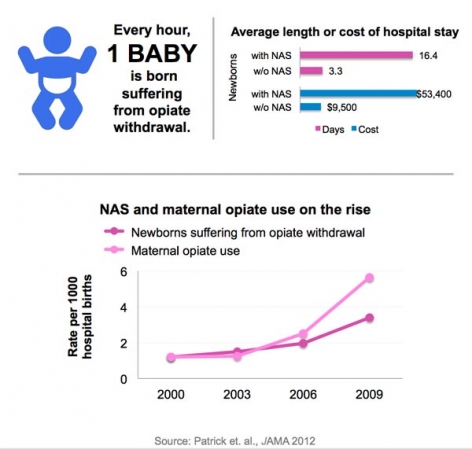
Maternal opiate use and newborns suffering from opiate withdrawal are on the rise in the U.S.

Text Description of Infographic

Use of opiates during pregnancy can result in a drug withdrawal syndrome in newborns called neonatal abstinence syndrome (NAS). A new study to determine the extent, context, and costs of NAS found that incidence of NAS is rising in the United States. The proportion of babies born with NAS tripled from 2000 to 2009, when an estimated 13,539 infants were born with NAS —equivalent to one baby suffering from opiate withdrawal born every hour. Newborns with NAS were more likely than other babies to also have low birthweight and respiratory complications. The number of delivering mothers using or dependent on opiates rose even more—nearly five-fold—from 2000 to 2009, to an estimated 23,009. In 2009, newborns with NAS stayed in the hospital an average of 16.4 days (compared to 3.3. days for other newborns), costing hospitals an estimated $720 million; the majority of these charges (77.6%) were paid by state Medicaid programs, reflecting the greater tendency of opiate-abusing mothers to be from lower-income communities. The rising frequency (and costs) of drug withdrawal in newborns points to the need for measures to reduce antenatal exposure to opiates.

Top Left Graph: Every hour, 1 baby is born suffering from opiate withdrawal.

Top Right Graph: Average length or cost of hospital stay graph. Newborns with NAS stayed in the hospital for an average of 16.4 days compared to 3.3 days for those without NAS. The hospital costs for newborns with NAS were $53,400 on average compared to $9,500 for those without NAS.

Bottom Graph: NAS and maternal opiate use on the rise graph.

The rate of babies born with NAS per 1,000 hospital births was 1.2 in 2000, 1.5 in 2003, 1.96 in 2007, and 3.39 in 2009. The rate of maternal opiate use per 1,000 hospital births was 1.19 in 2000, 1.26 in 2003, 2.52 in 2006, and 5.63 in 2009.